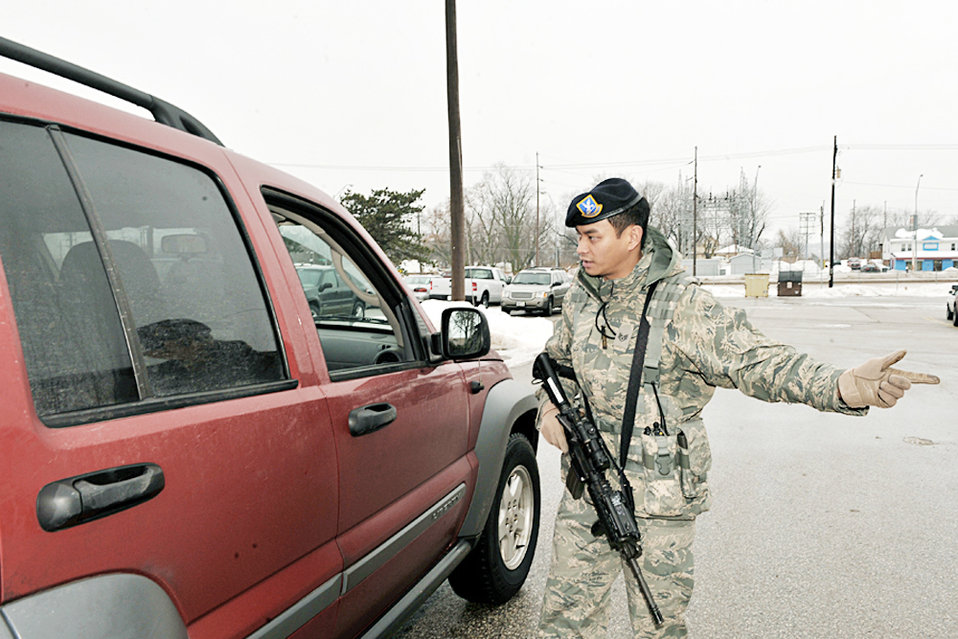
The turn is back there

Staff Sgt. Ernie Argarin directs a driver at an entry control point near the community center here during a point of distribution exercise Jan. 21, 2010, at Offutt Air Force Base, Neb. Sergeant Argarin is assigned to the 55th Security Forces Squadron.